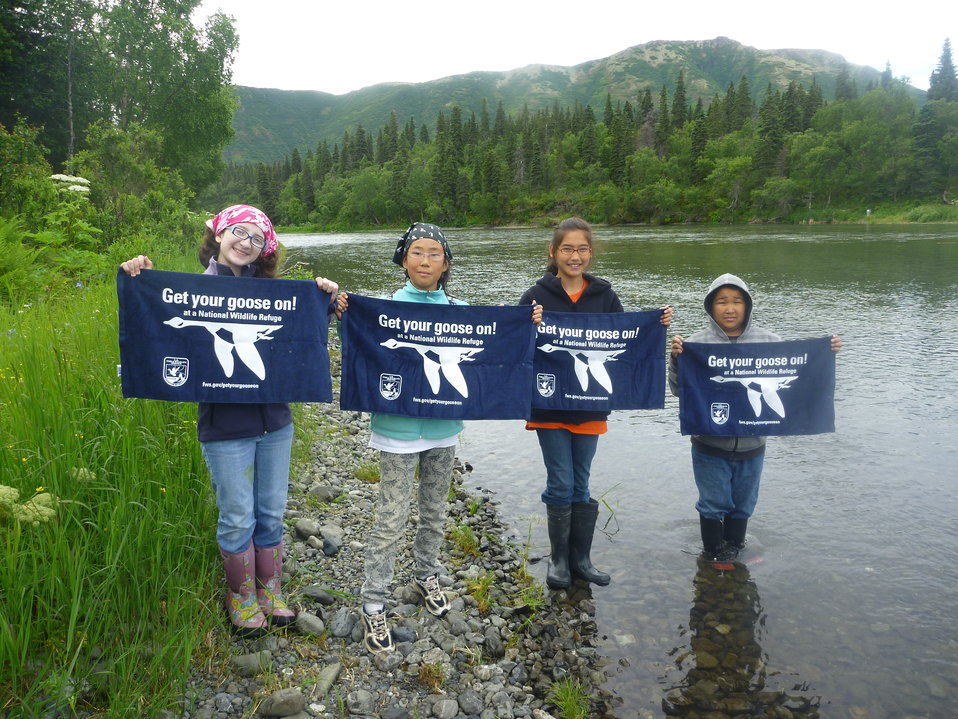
GYGO! - Alaska Style!

These youngsters Get Their Goose On! at Togiak National Wildlife Refuge in southwest Alaska.

The refuge supports 35 species of fish, 30 species of terrestrial mammals, 17 species of marine mammals, and 201 bird species.